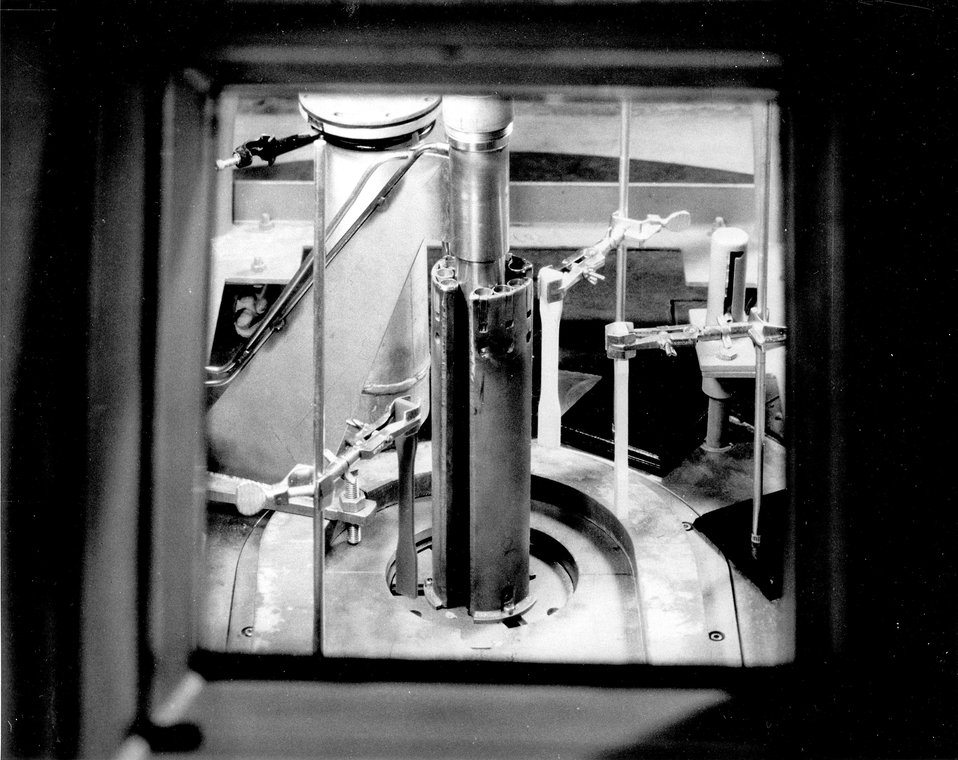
Effects of radiation in organic substances...Red, white, and yellow tensile specimens of organic plastics being irradiated by 19,000 curies of cobalt-60. c. 1967